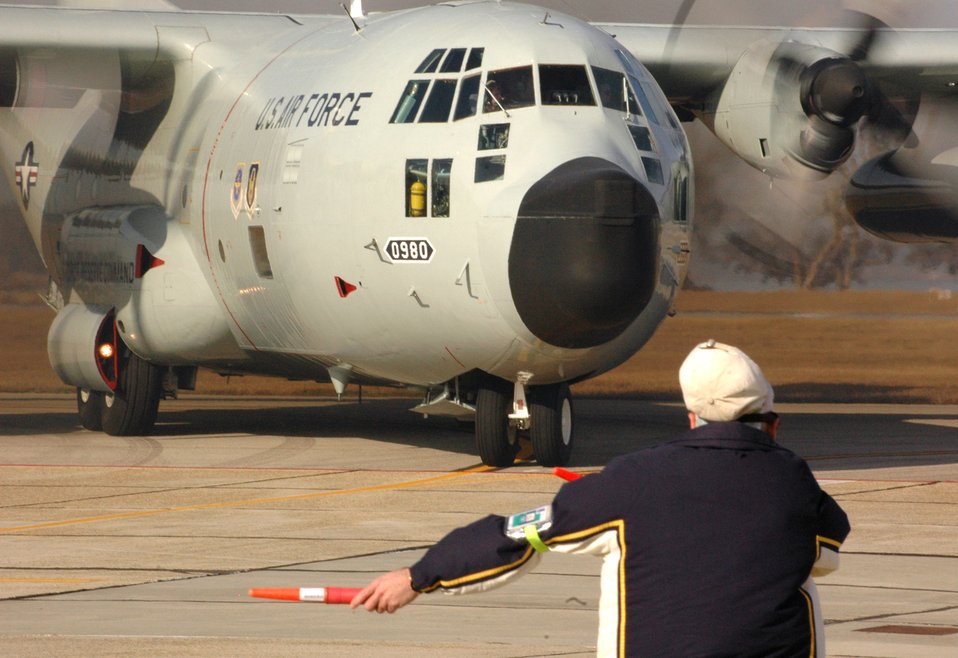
Last WC-130H departs Keesler

KEESLER AIR FORCE BASE, Miss. (AFPN) -- Senior Master Sgt. Richard Rivard taxis the final WC-130H aircraft out on the runway on its way to Willow Grove Air Reserve Station, Pa. Aircraft No. 980 was the last H-model aircraft to depart the 403rd Wing after its complete conversion to the WC-130J. Sergeant Rivard has served more than 20 years as a crew chief, mostly servicing H-models. He is an air reserve technician with the 403rd Aircraft Maintenance Squadron, Keesler Air Force Base, Miss.